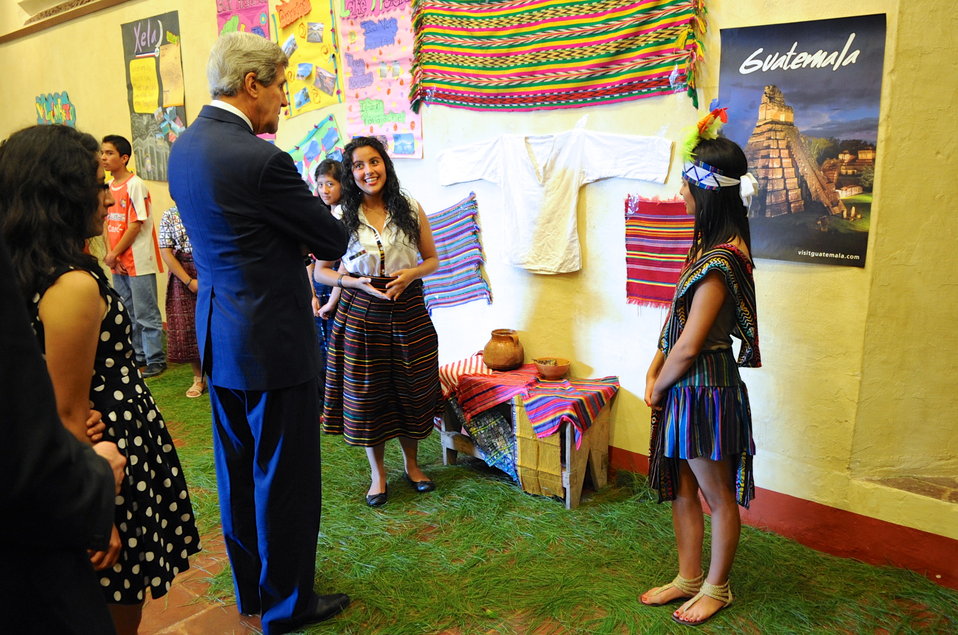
Secretary Kerry Meets Guatemalan Students

U.S. Secretary of State John Kerry learns about Guatemala from local students who participated in a State Department school program in Antigua, Guatemala, on June 5, 2013.